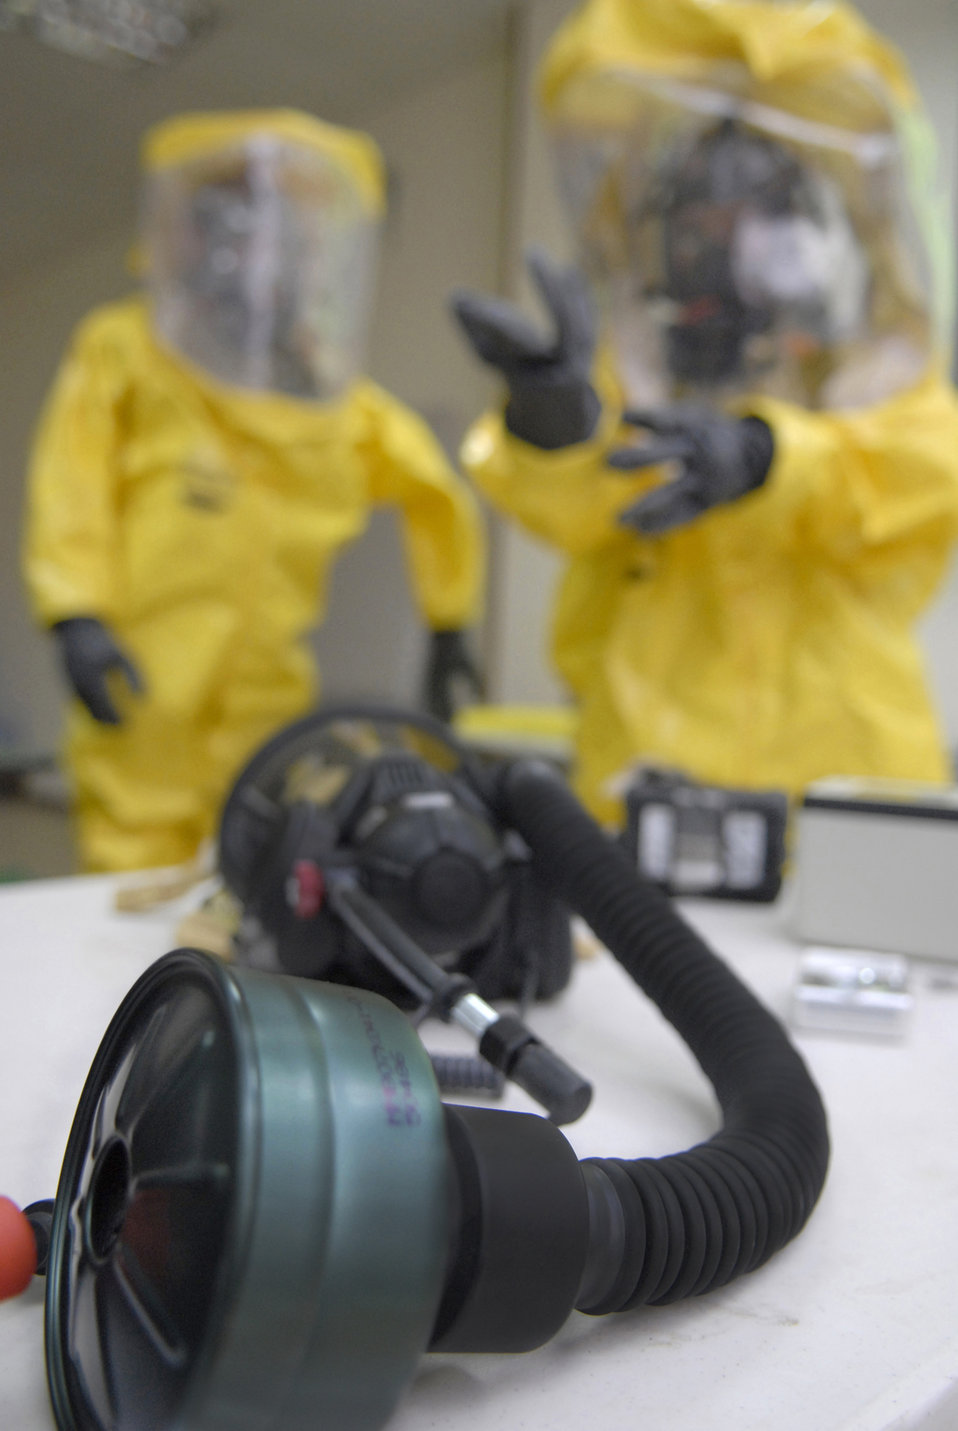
Who you gonna call?

Staff Sgt. Trevor Fettig (left) and Senior Airman Carrie Gay wear protective suits during a unit exercise March 27 at an air base in Southwest Asia. They are readiness and emergency management journeymen with the 379th Expeditionary Civil Engineer Squadron. The readiness and emergency management team members use a variety of specialized equipment when working with unknown and hazardous materials. Sergeant Fettig is from Lompoc, Calif., and is deployed from Travis Air Force Base, Calif. Airman Gay hails from Sacramento, Calif., and is deployed from McConnell AFB, Kan.